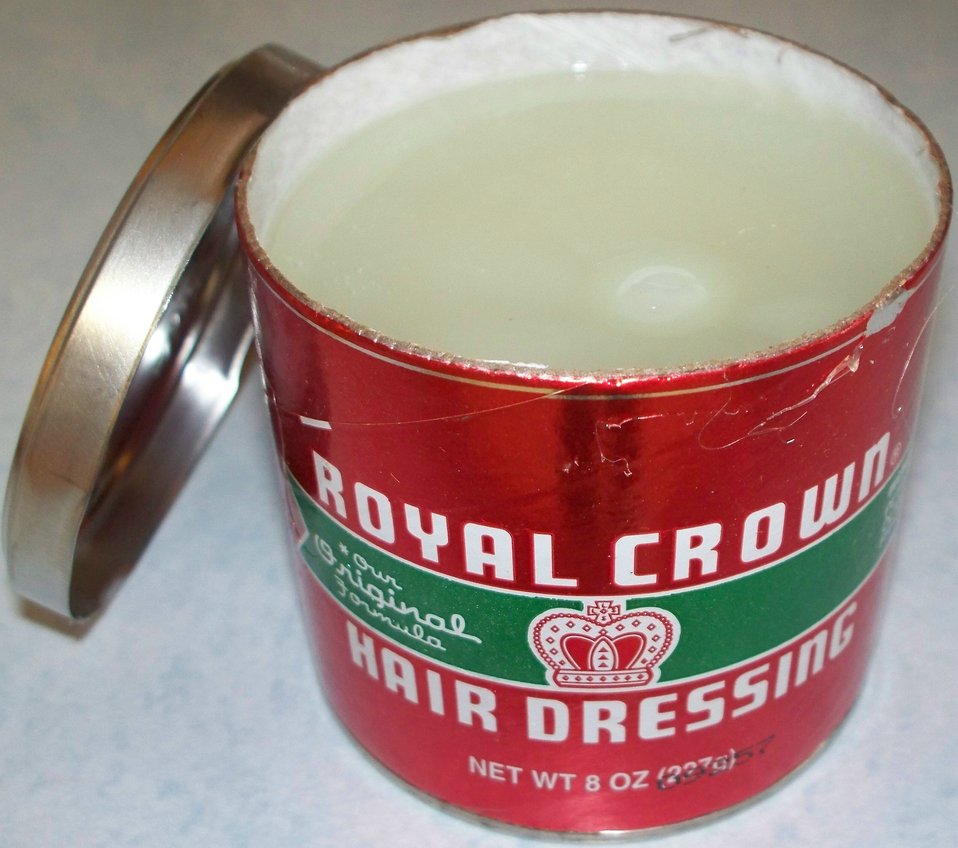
Can of Pomade